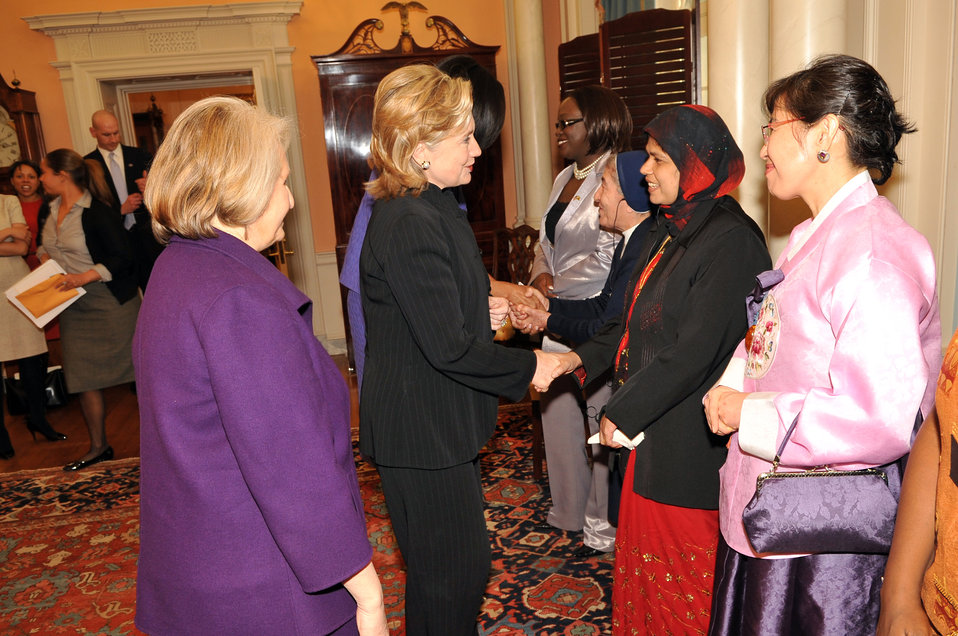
Secretary Clinton Shakes Hands With Honoree Jansila Majeed

U.S. Secretary of State Hillary Rodham Clinton shakes hands with Honoree Jansila Majeed of Sri Lanka at the 2010 International Women of Courage at the U.S. Department of State, Washington, D.C. March 10, 2010.